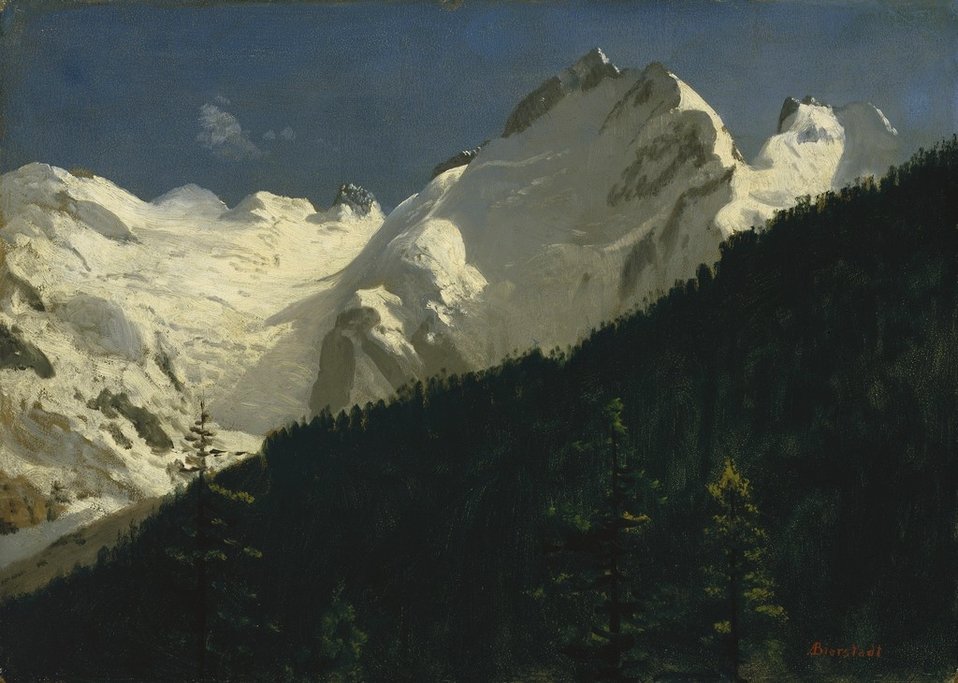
Albert Bierstadt - Piz Bernina, Switzerland